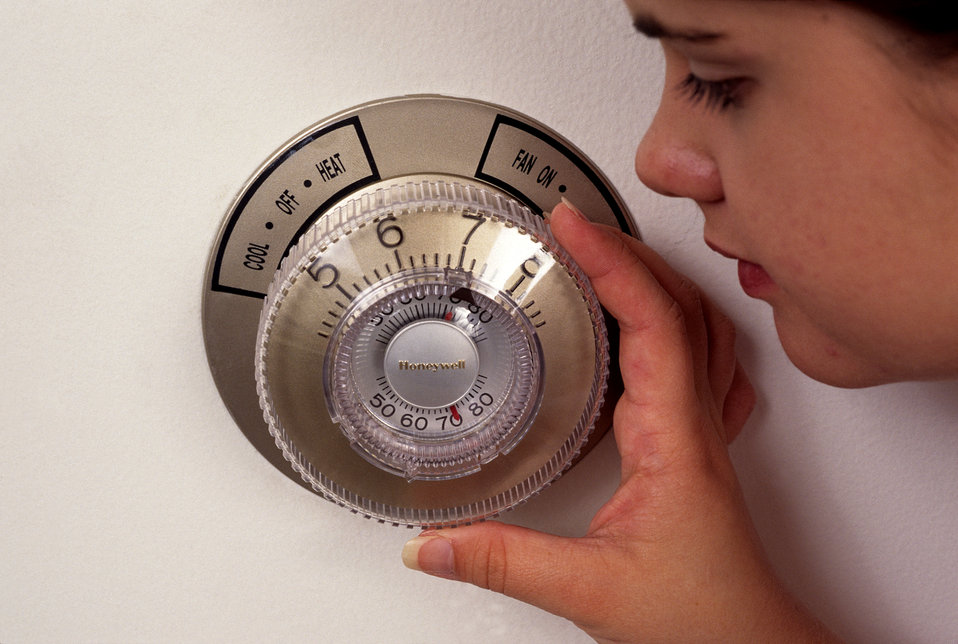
This 1997 image depicted a visually-impaired woman as she was using a thermostat that had been designed with features, which took into account the needs of end users with such vision impairment. Design elements such as tactile variations, enlarged numerals, a large, easily rotatable control dial, and a click noise cue as the temperature was being set, helped to negate difficulties that might be encountered by such visually, or mobility-impaired individuals.